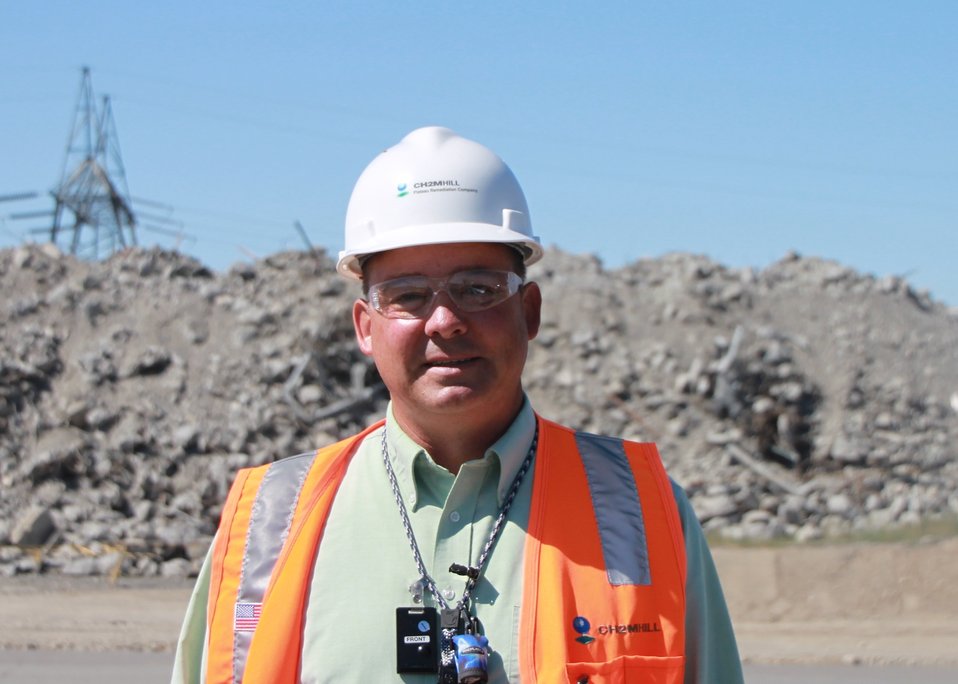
Recovery Act Opens Doors to Worker at Hanford Site

In 2009, Nickeson was hired as a work planner by Babcock Services Inc., one of several subcontractors helping DOE contractor CH2M HILL Plateau Remediation Company perform environmental cleanup of the Hanford Site. He is putting his previous experience as an operations manager to work, teaming with engineers and subject matter experts to develop plans to execute field work safely and efficiently.

“I’ve been trained for a new career, in a new field, at a site that is unlike anywhere else I’ve ever worked,” Nickeson said, describing not only the landscape but also the work culture. “They are serious about safety here. From day one, they put you into training that helps you become aware of your safety and the safety of others.”